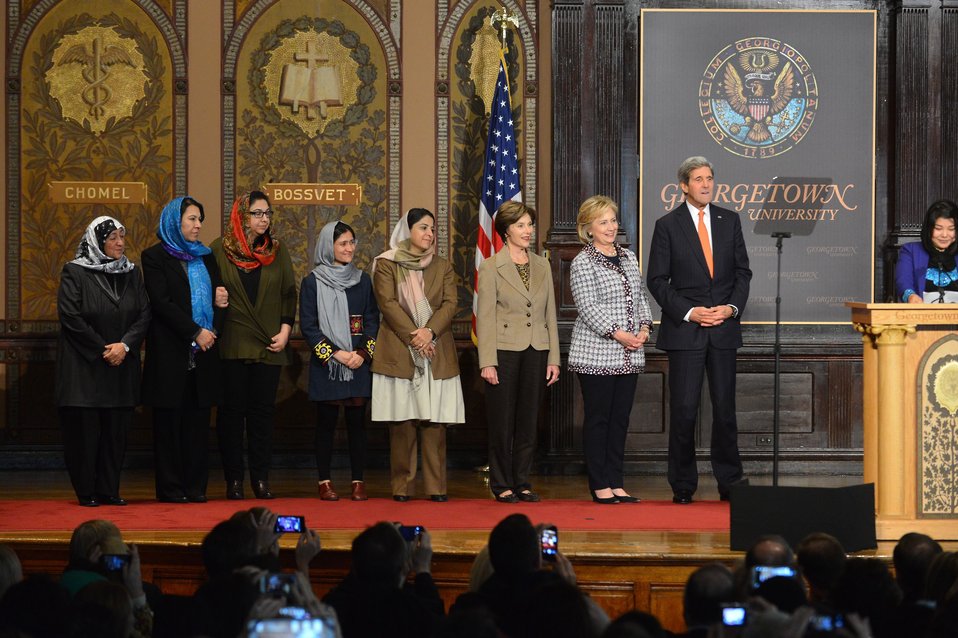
Secretary Kerry, Former Secretary Clinton, and Former First Lady Laura Bush Share the Stage

U.S. Secretary of State John Kerry, former U.S. Secretary of State Hillary Rodham Clinton, and former First Lady Laura Bush share the stage for a symposium addressing opportunities and solutions for sustaining the significant progress Afghan women and girls have made during the past 10 years at Georgetown University in Washington, D.C., on November 15, 2013.